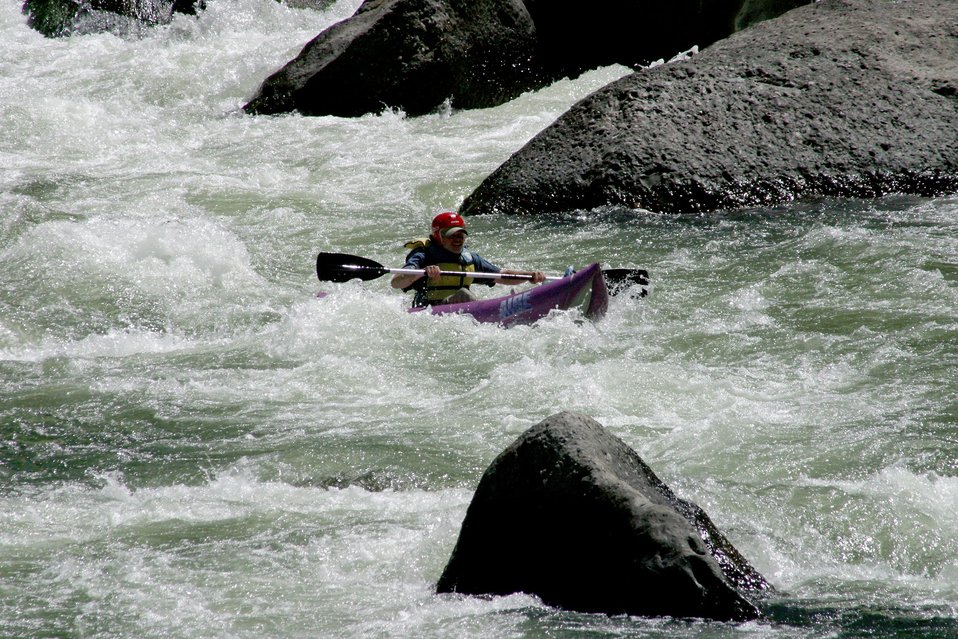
Boaters negotiate Blossom Rapids.